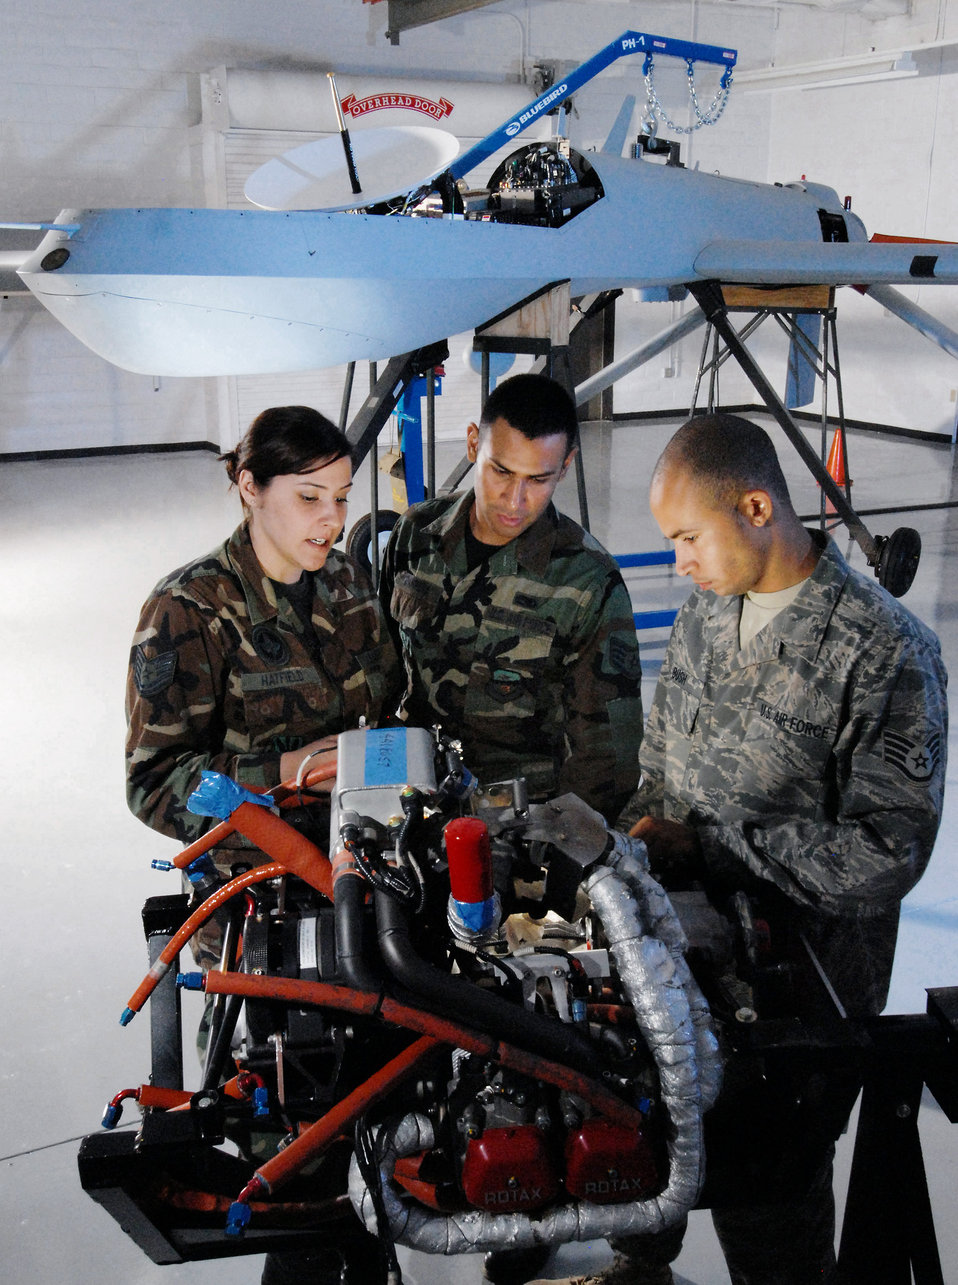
Predator maintenance

Tech. Sgt. Rebecca Hatfield (left), an instructor with Field Training Detachment 26 of the California Air National Guard's 163rd Maintenance Group, shows the components of the engine of an MQ-1 Predator unmanned aircraft to Staff Sgts. Carlos Barrera (center) and Alex Bush Oct. 15. The two sergeants are crew chiefs with the 163rd Reconnaissance Wing at March Air Reserve Base, Calif. Airmen with Det. 26 train active duty, Reserve and Air National Guard personnel on Predator maintenance operations.